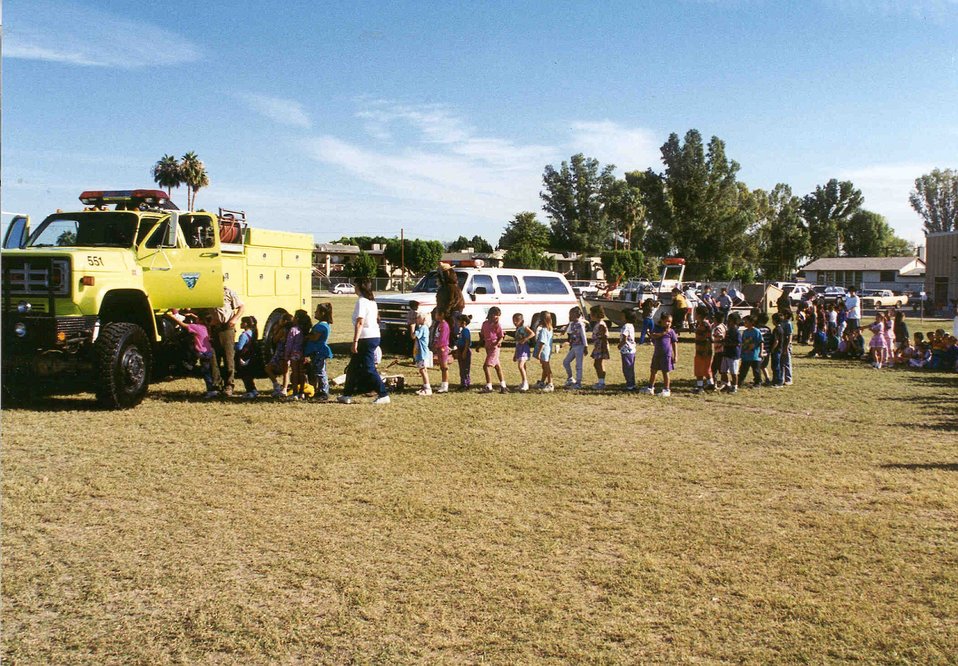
School children are introduces to Smokey and get to see first hand the inside of a fire truck and fire boat.